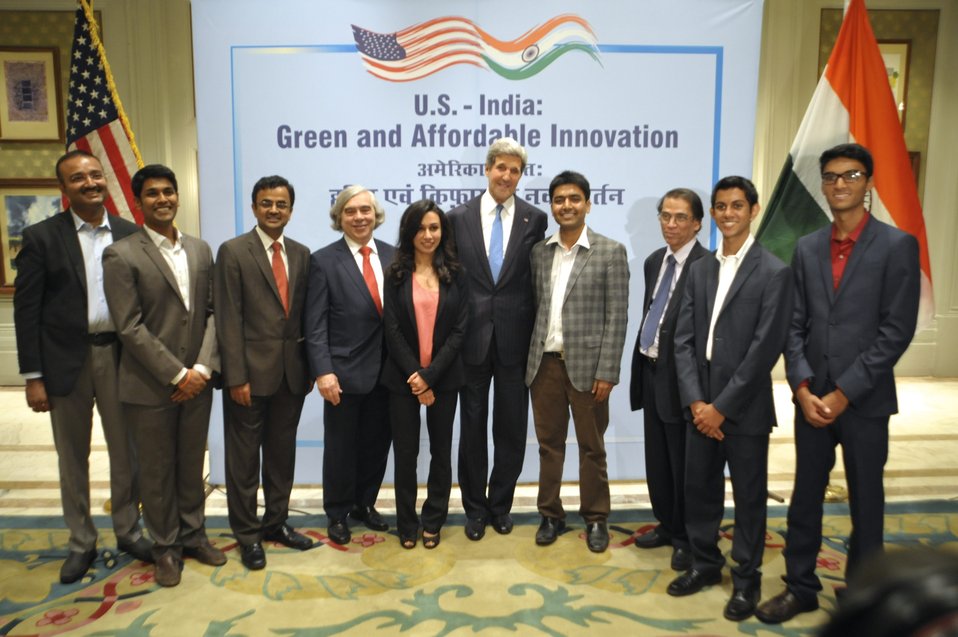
Secretary Kerry attends an India Tech Expo

U.S. Secretary of State John Kerry and U.S. Secretary of Energy Ernest Moniz pose with Indian entrepreneurs developing products in the clean energy and technology sectors during an expo in New Delhi on June 24, 2013.